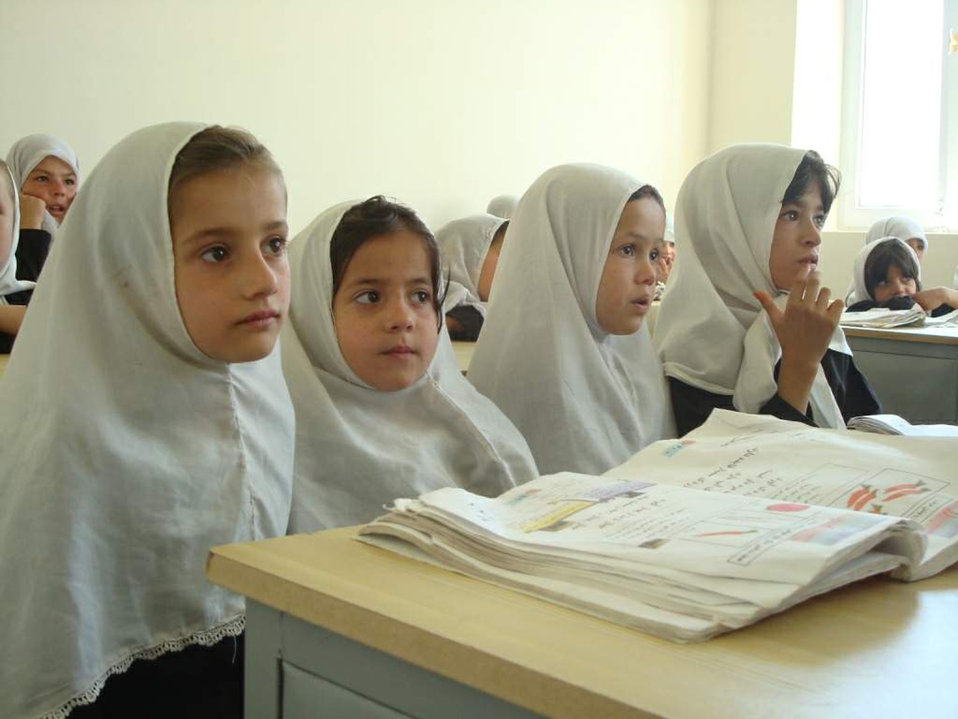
American servicemembers, Afghan leaders celebrate girls' school opening

First grader girls sit at the newly opened eight-classroom Haish Saidqi Girls' School June 23 in the Panjshir Province, Afghanistan. According to the Afghan Ministry of Education, there are 1.7 million girls studying in primary schools across the country.